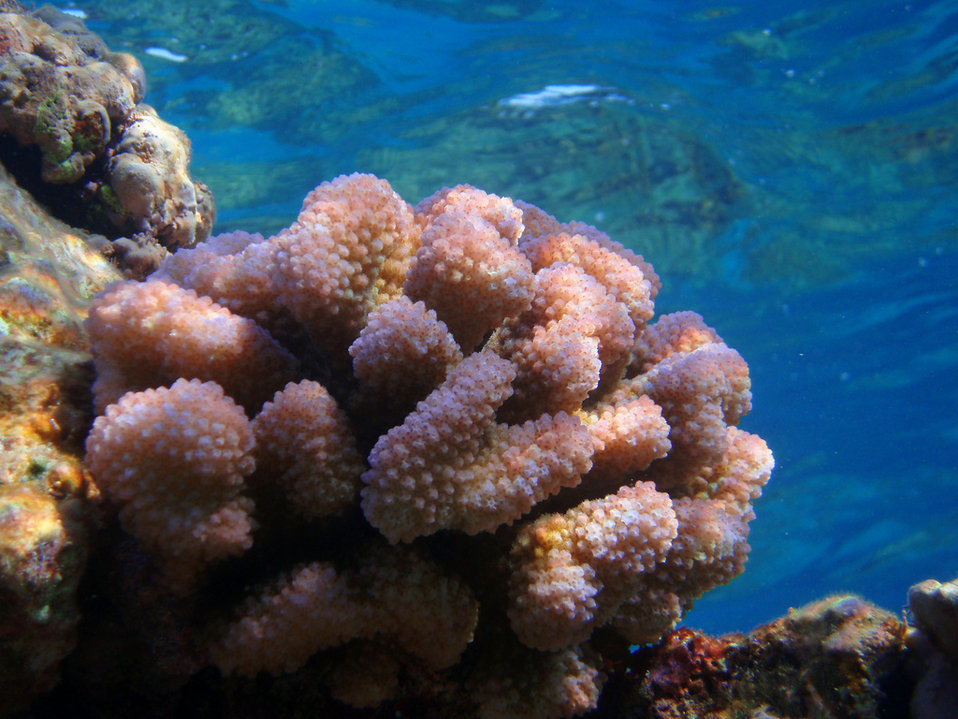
cauliflower coral

French Frigate Shoals, Hawaiian Islands National Wildlife Refuge,
Papahānaumokuākea Marine National Monument